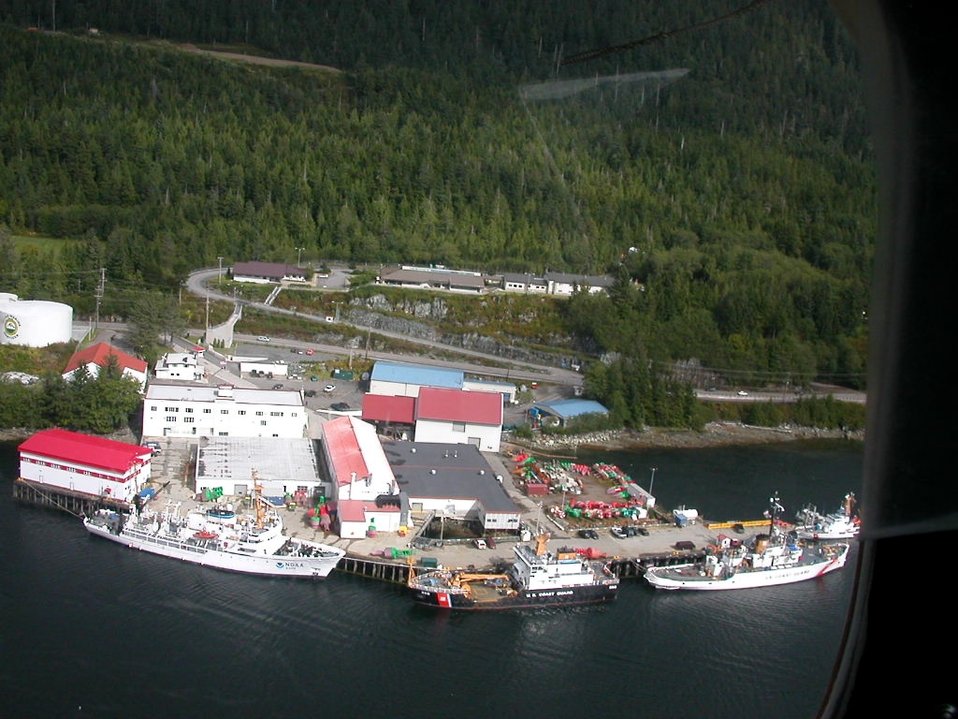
FAIRWEATHER tied up at ISC Ketchikan with the buoy tender PETITE and the Cutter ACUSHNET.